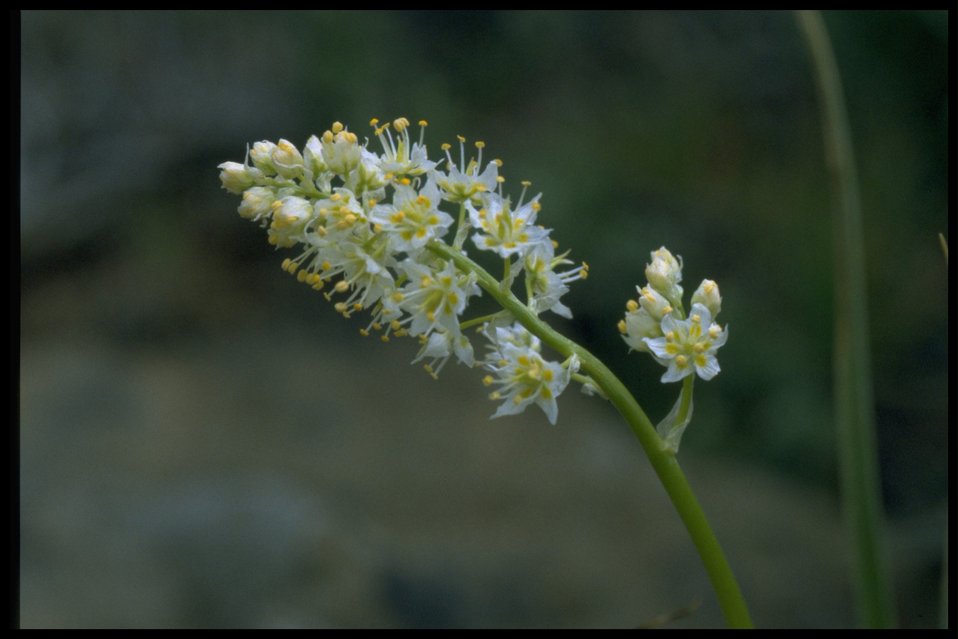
Closeup shot of meadow deathcamas (Zigadenus venenosus).